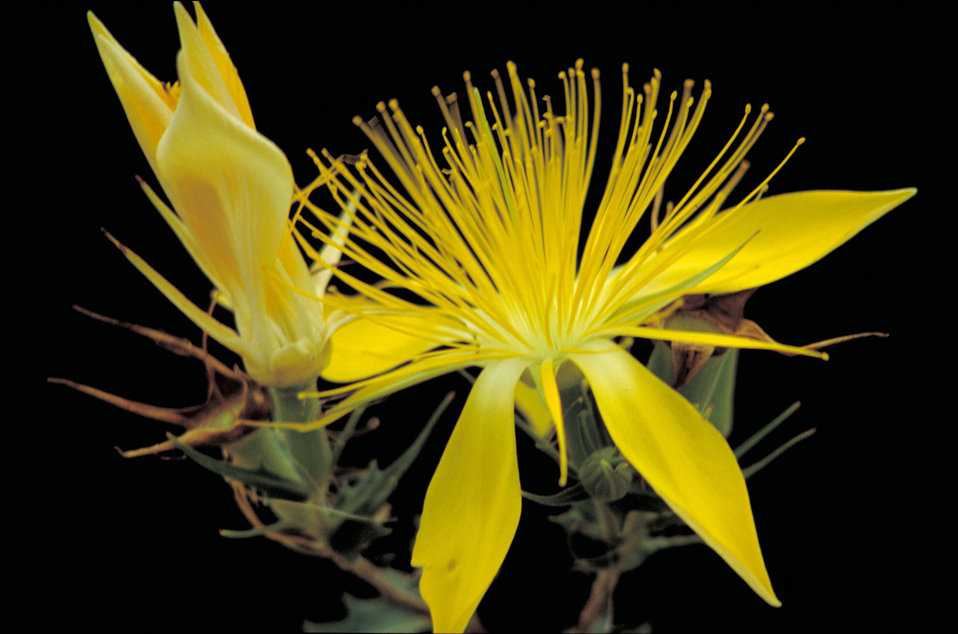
Adonis Blazingstar in bloom

A yellow Adonis Blazingstar flower in bloom.